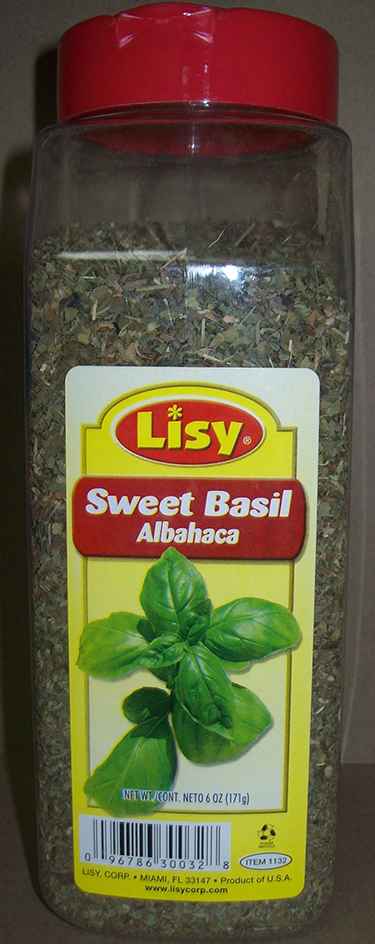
RECALLED – Sweet basil (Albahaca)

April 9, 2014 – Product Recall – Lisy Corporation Issues Recall on: Lisy Sweet Basil (Albahaca) 6 Oz., Item 1132 Lot #'s A013 0518 & A014 0518.